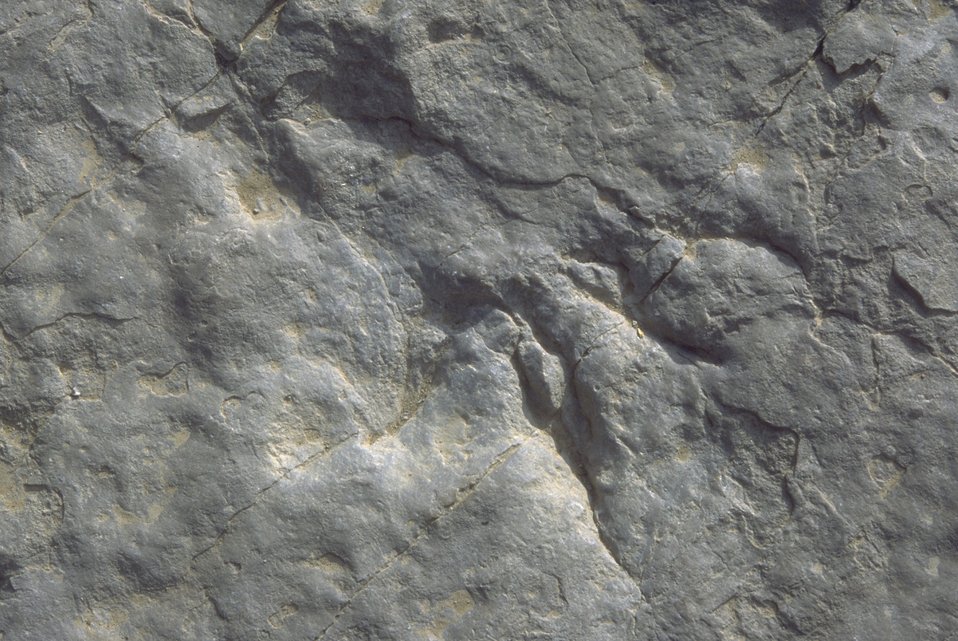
Detail of dinosaur track at the Red Gulch Dinosaur Tracksite, Worland Field Office.